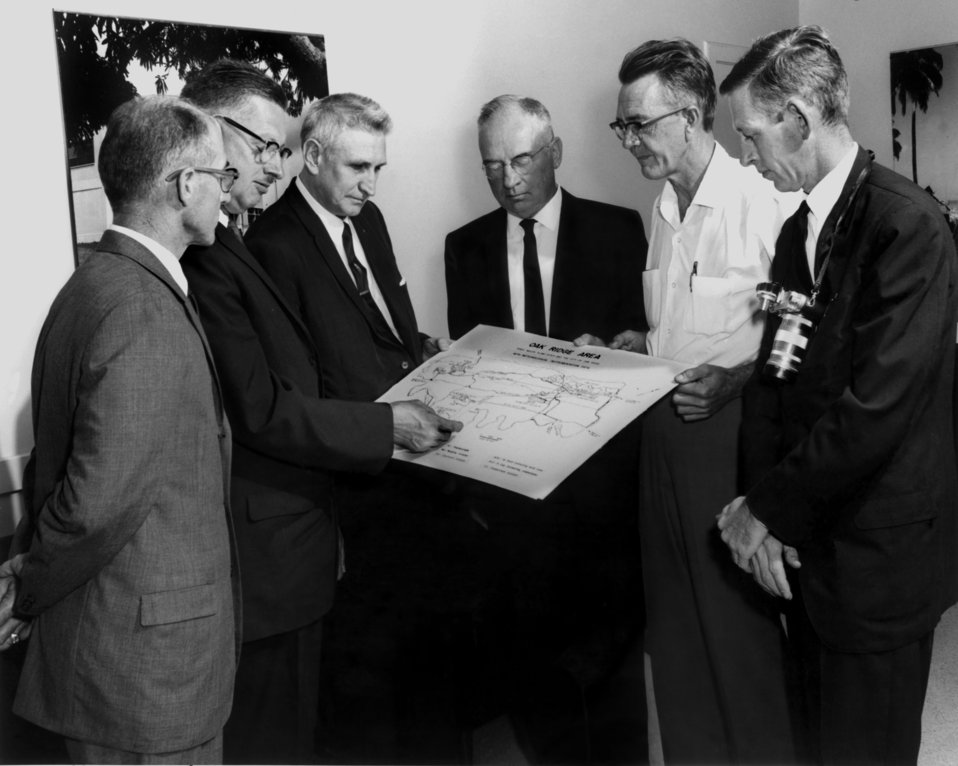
20 Year Ridgers Mills,Hicks,Dunbar,Provine and Ed Westcott Oak Ridge

62-766-1 DOE photo by Jim Westcott 9-16-1962 Oak Ridge Tennessee